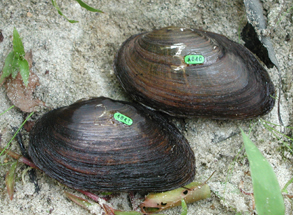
Prozac Exposure Found to Disrupt Mussel Reproduction

Eastern elliptio mussels such as the ones pictured above were studied for the effects of fluoxetine exposure on breeding.